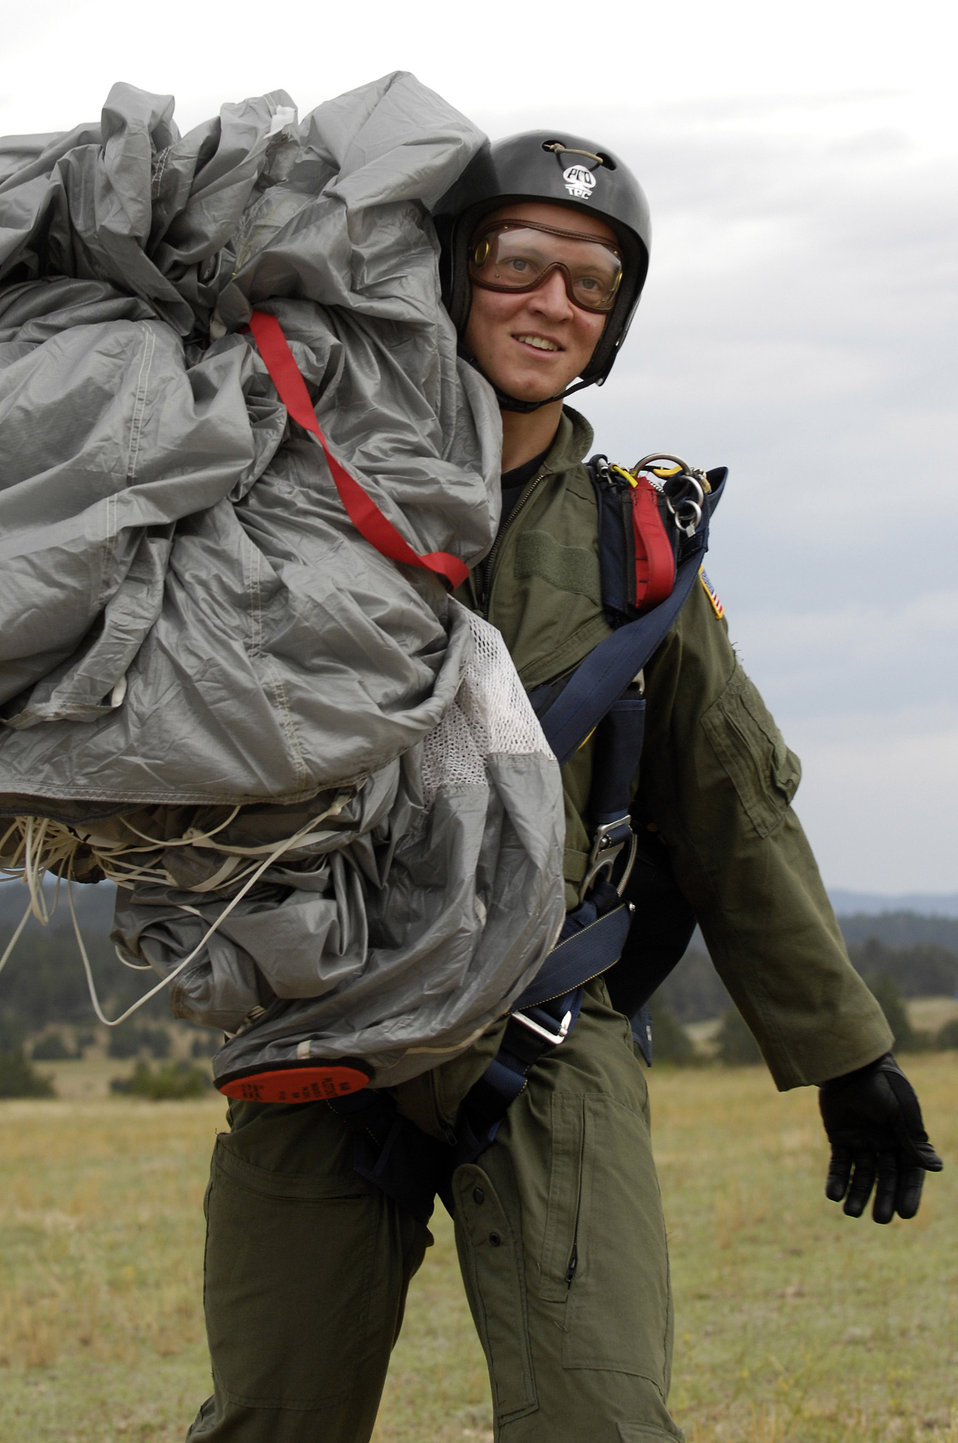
Earning those jump wings

U.S. Air Force Academy Cadet 3rd Class David Barron smiles after completing his fourth free-fall jump July 7 during Airmanship 490, Basic Parachuting, an airmanship program where cadets earn their basic jump wings after successfully completing five free-fall jumps.